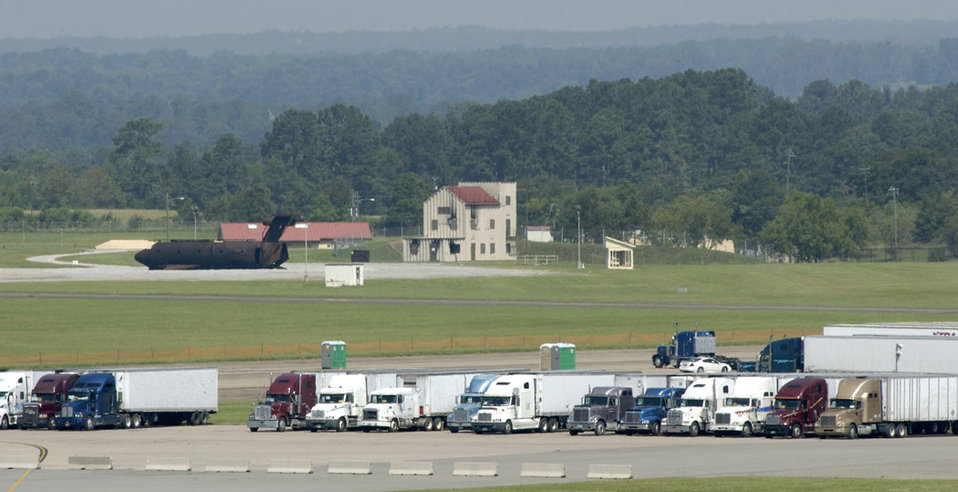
Maxwell AFB serves as staging facility for hurricane operations

MAXWELL AIR FORCE BASE, Ala. -- Semi-trucks sit at this staging facility for hurricane assistance. The Federal Emergency Management Agency trucks carried ice, packaged meals and water to hurricane evacuees.